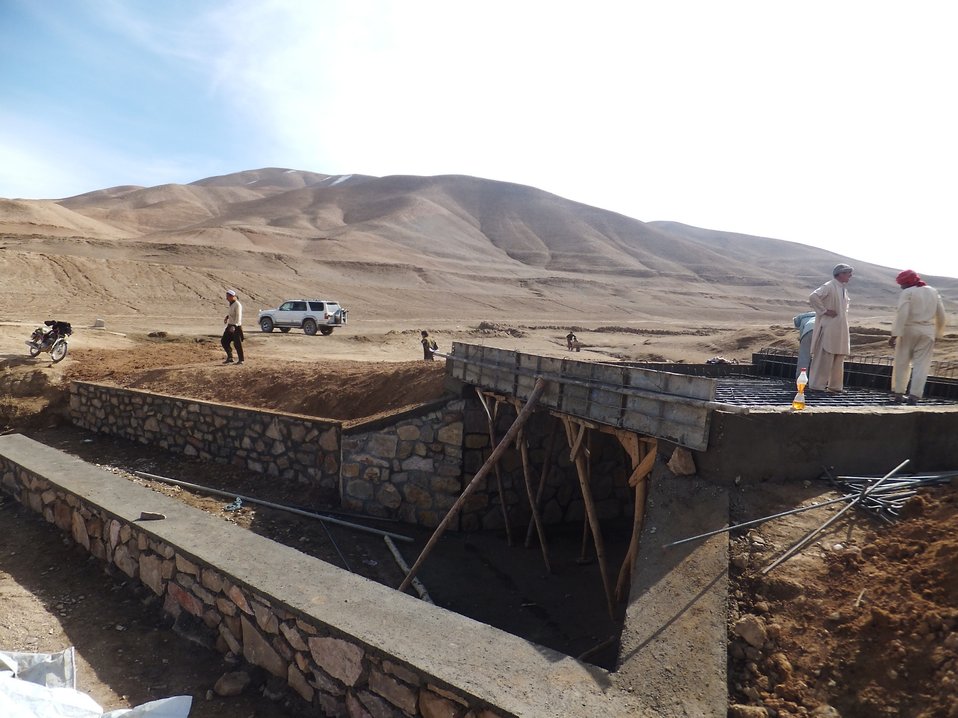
Akhta Khana Sofla CDC Members Constructing District Government Approved Culvert